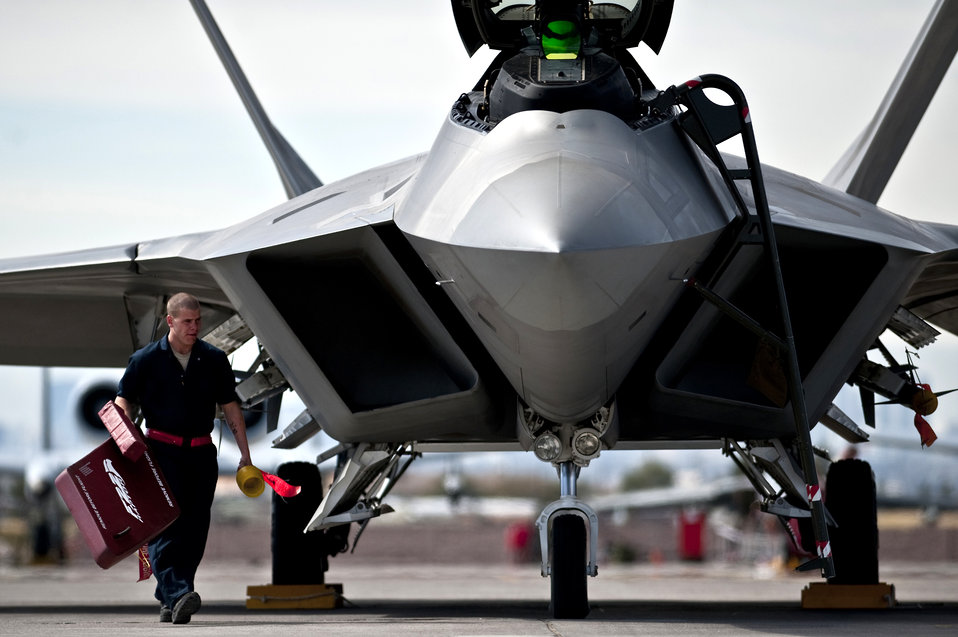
Unleashing the Raptor

Airman 1st Class Jonathan Foster removes the intake covers from an F-22 Raptor March 2, 2011, before a Red Flag training mission at Nellis Air Force Base, Nev. Airman Foster is a crew chief assigned to the 49th Aircraft Maintenance Squadron at Holloman AFB, N.M.